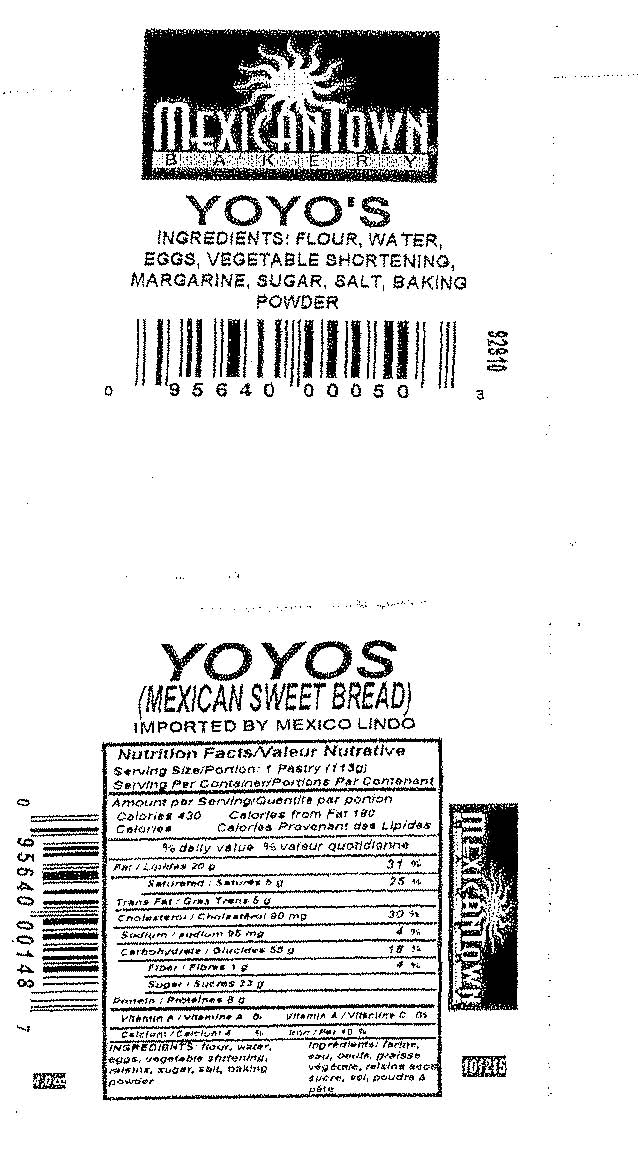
RECALLED - Mexicantown Yoyo's

April 7, 2011 - Product Recall - Mexicantown Whole Issues Allergy Alert On Undeclared Pecans In Pan Nuez And Undeclared Milk In Magdalena, Pan De Maiz, YoyoPan Nuez, And Tacos De Pan Danes.